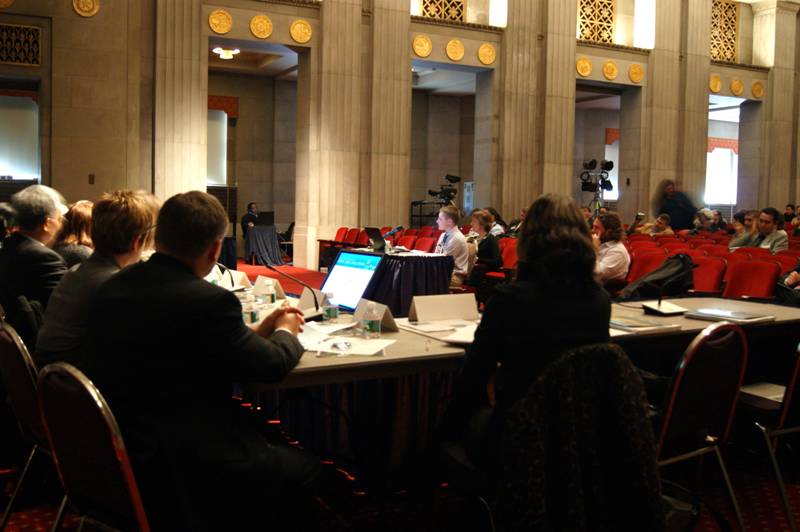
Coral Reef Task Force - Winter Meeting 2012